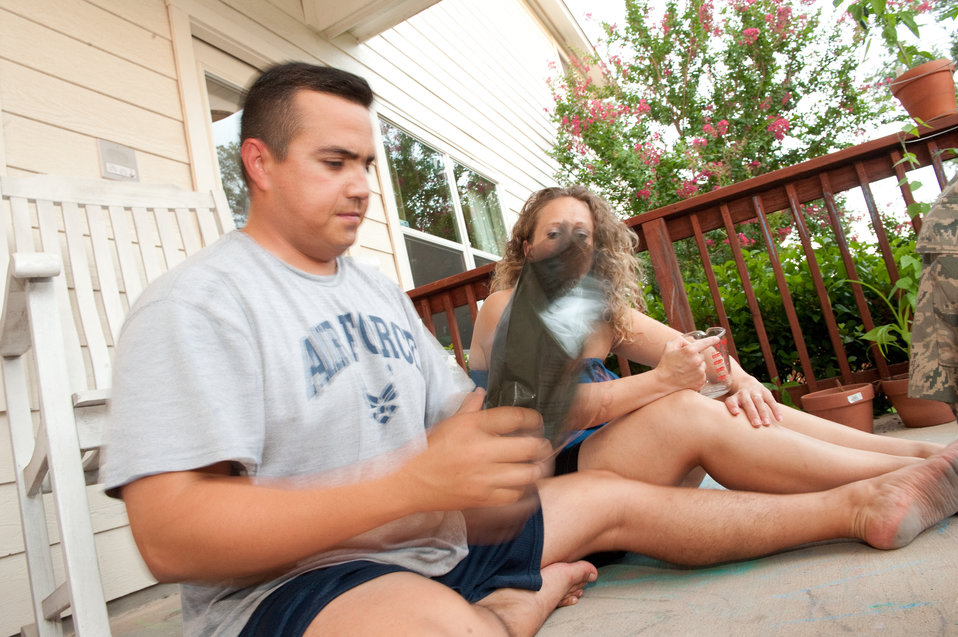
Blogging Couple Deployment preperation

Tech. Sgt. Christina Gamez (right) looks on and learns as her husband Master Sgt. Rudy Gamez shakes a bag of permethrin insect repellent and water to form an emulsion in bag at his home in San Antonio, Texas, on July 13, 2010. The bag will be used to soak the blouse or pants of a uniform set, in a repellent and water emulsion, providing some protection for many washings. He is preparing for Combat Skills Training and his sixth deployment to Southwest Asia, and Tech. Sgt Gamez will be on her first deployment. Later this year he and his wife Tech. Sgt Christina Gamez will both be blogging about their deployment experiences.